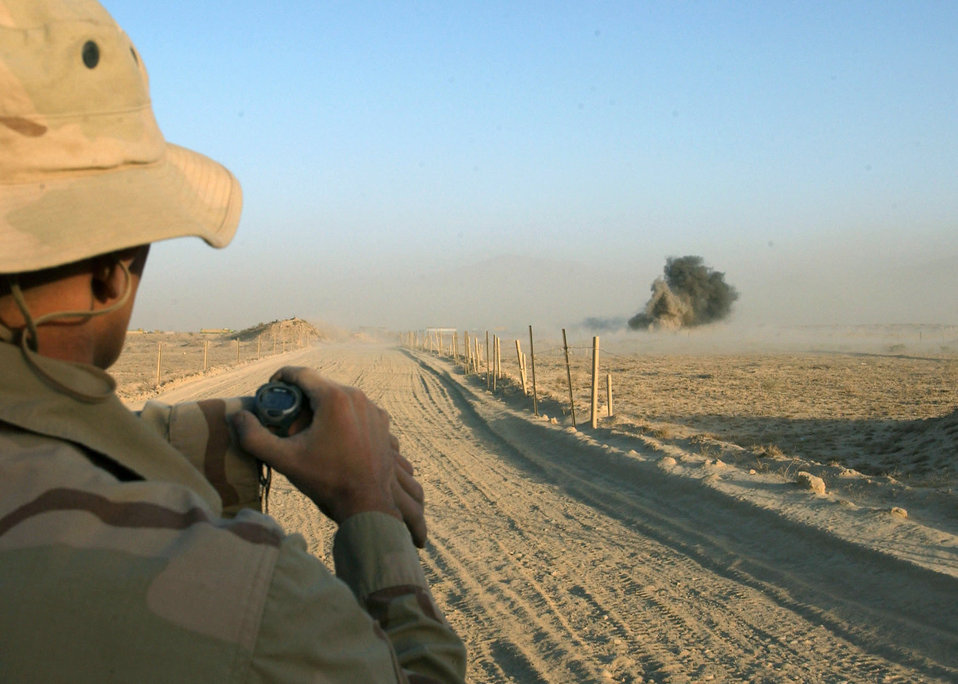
Blowing stuff up for safety's sake

BAGRAM AIR BASE, Afghanistan -- Senior Airman David, whose last name is omitted for security reasons, times the detonation of unexploded ordnance. Airman David is an explosive ordnance disposal technician with the 455th Civil Engineer Flight here. He is deployed from Elmendorf Air Force Base, Alaska, supporting Operation Enduring Freedom.